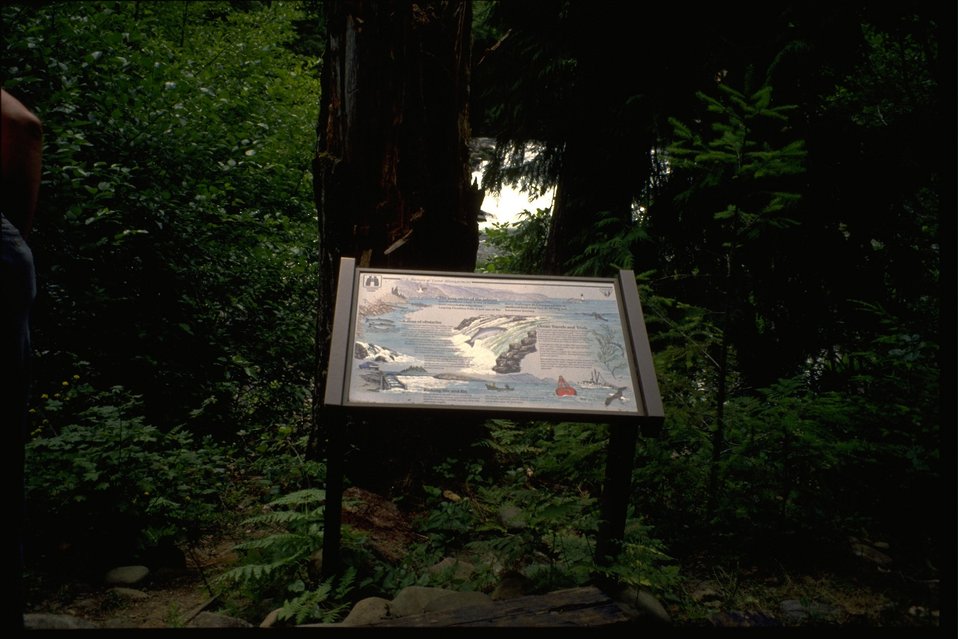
Watchable Wildlife panel on trail near Deadline Falls.